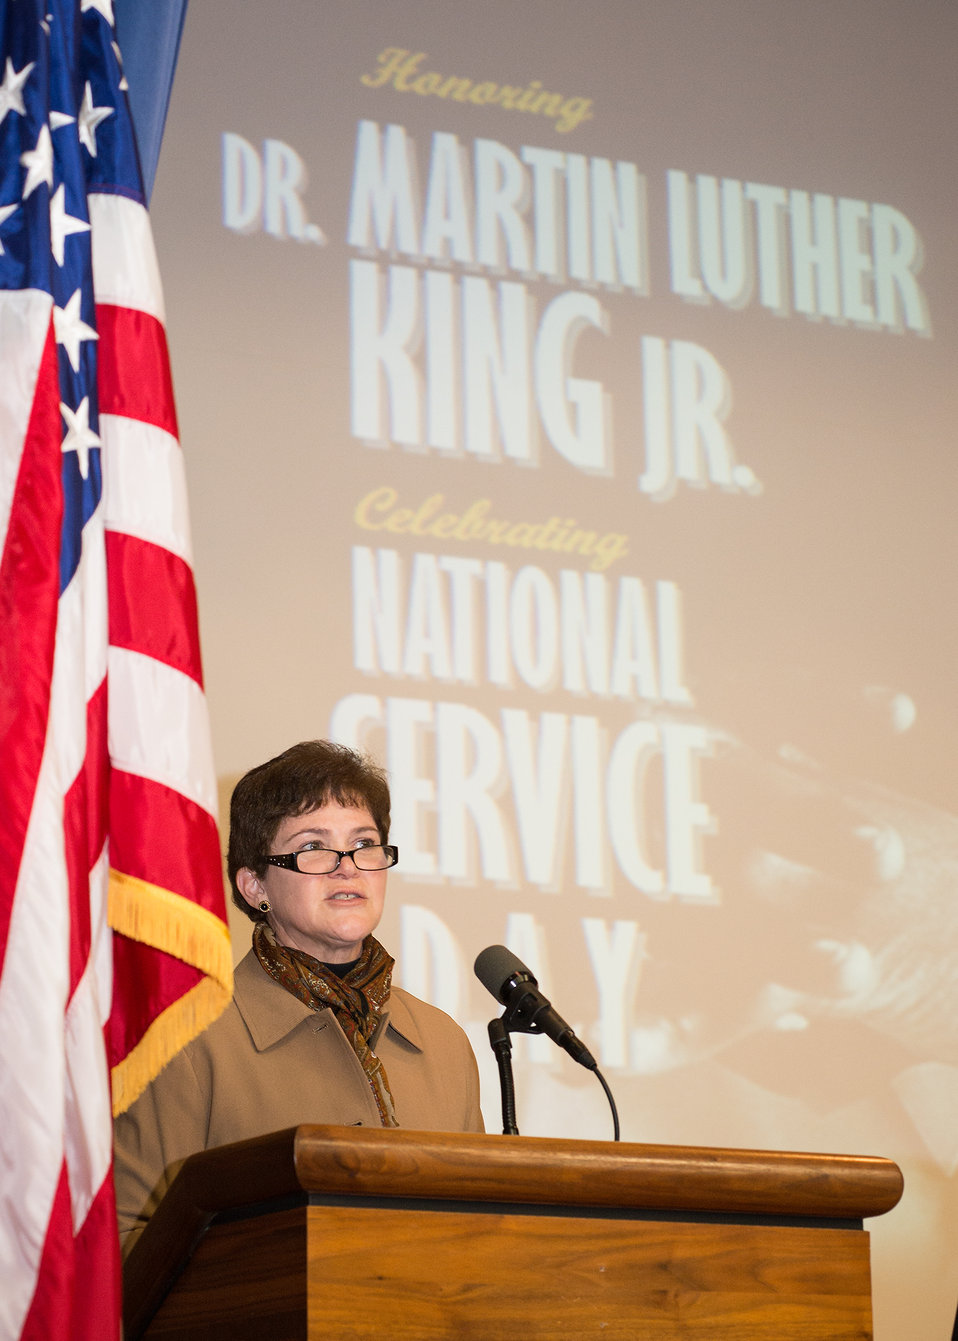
Agriculture Deputy Agriculture Secretary Krysta Harden speaks at the U.S. Department of Agriculture's Dr. Martin Luther King Jr. and National Service Day in Washington, D.C. on Wednesday, Jan. 15, 2014.